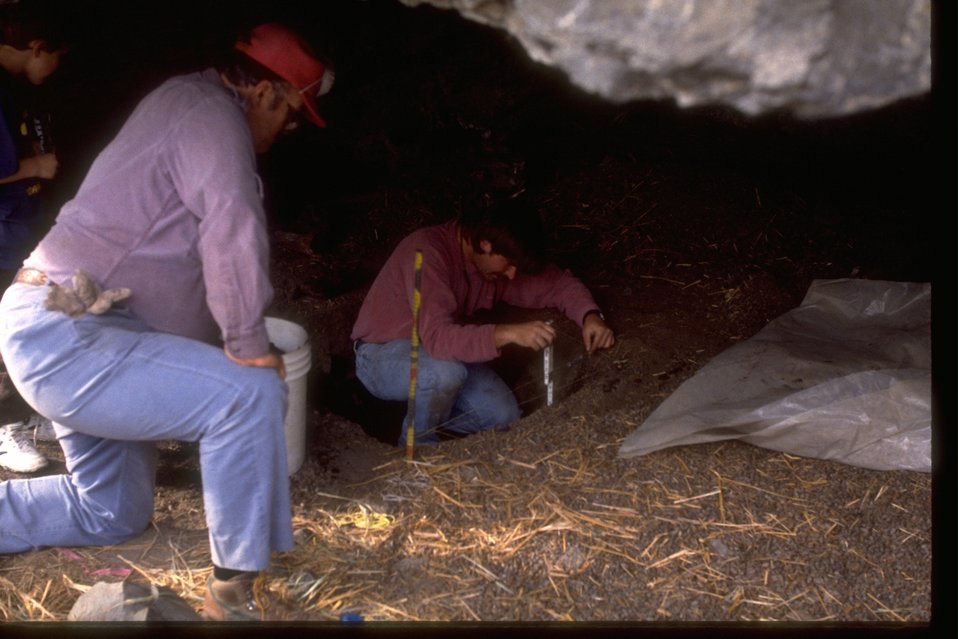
Archeologist examines rockshelter at Fishtrap Management Area, Washington.